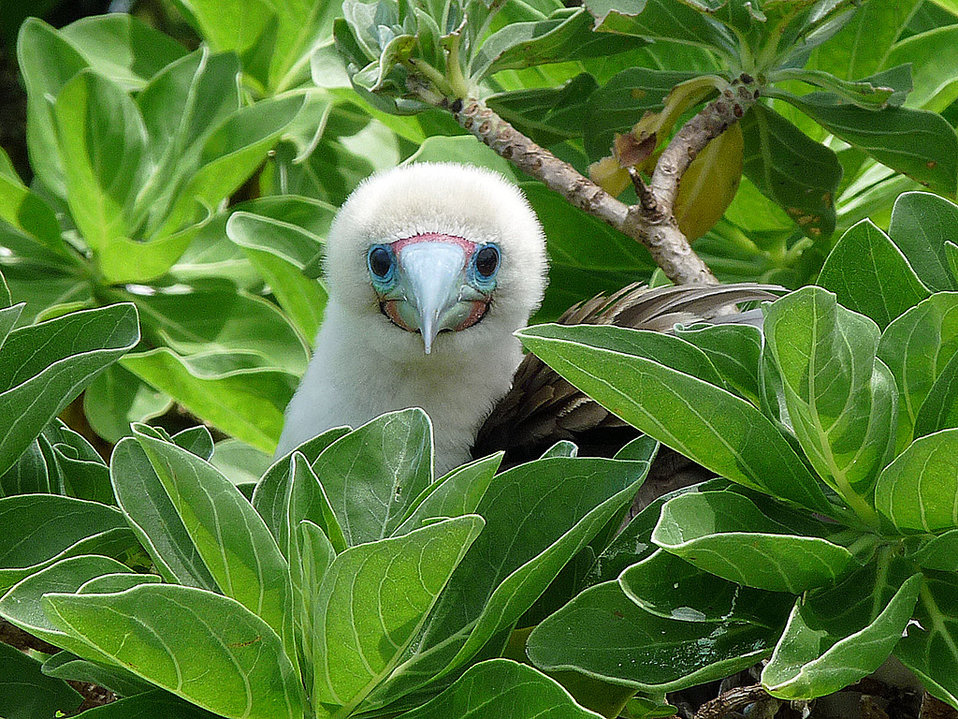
red-footed booby

Palmyra Atoll National Wildlife Refuge, Pacific Islands